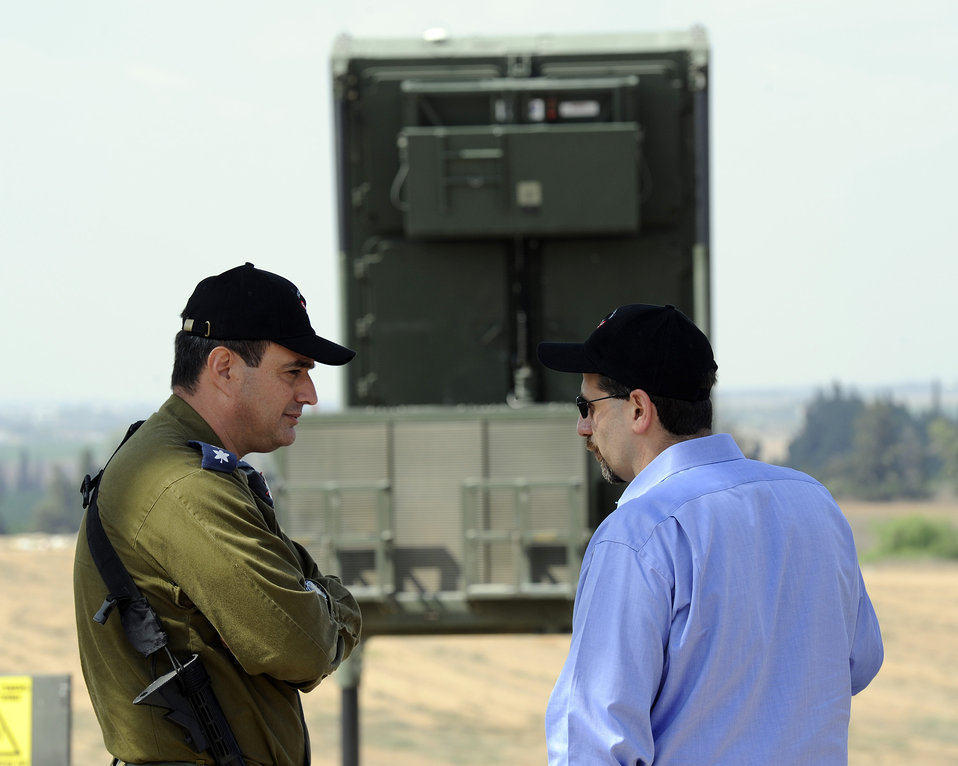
Ambassador Shapiro Tours the Iron Dome Battery in the South of Israel

U.S. Ambassador to Israel Daniel B. Shapiro, hosted by Captain Elad Tzinman, Israeli Air Force Battery Commander, and Colonel Tzvika Chaimovitch, Israeli Air Force 167 Wing Commander, travels to the south of Israel for a tour of the Iron Dome Battery in Ashkelon, Israel, on August 9, 2011.